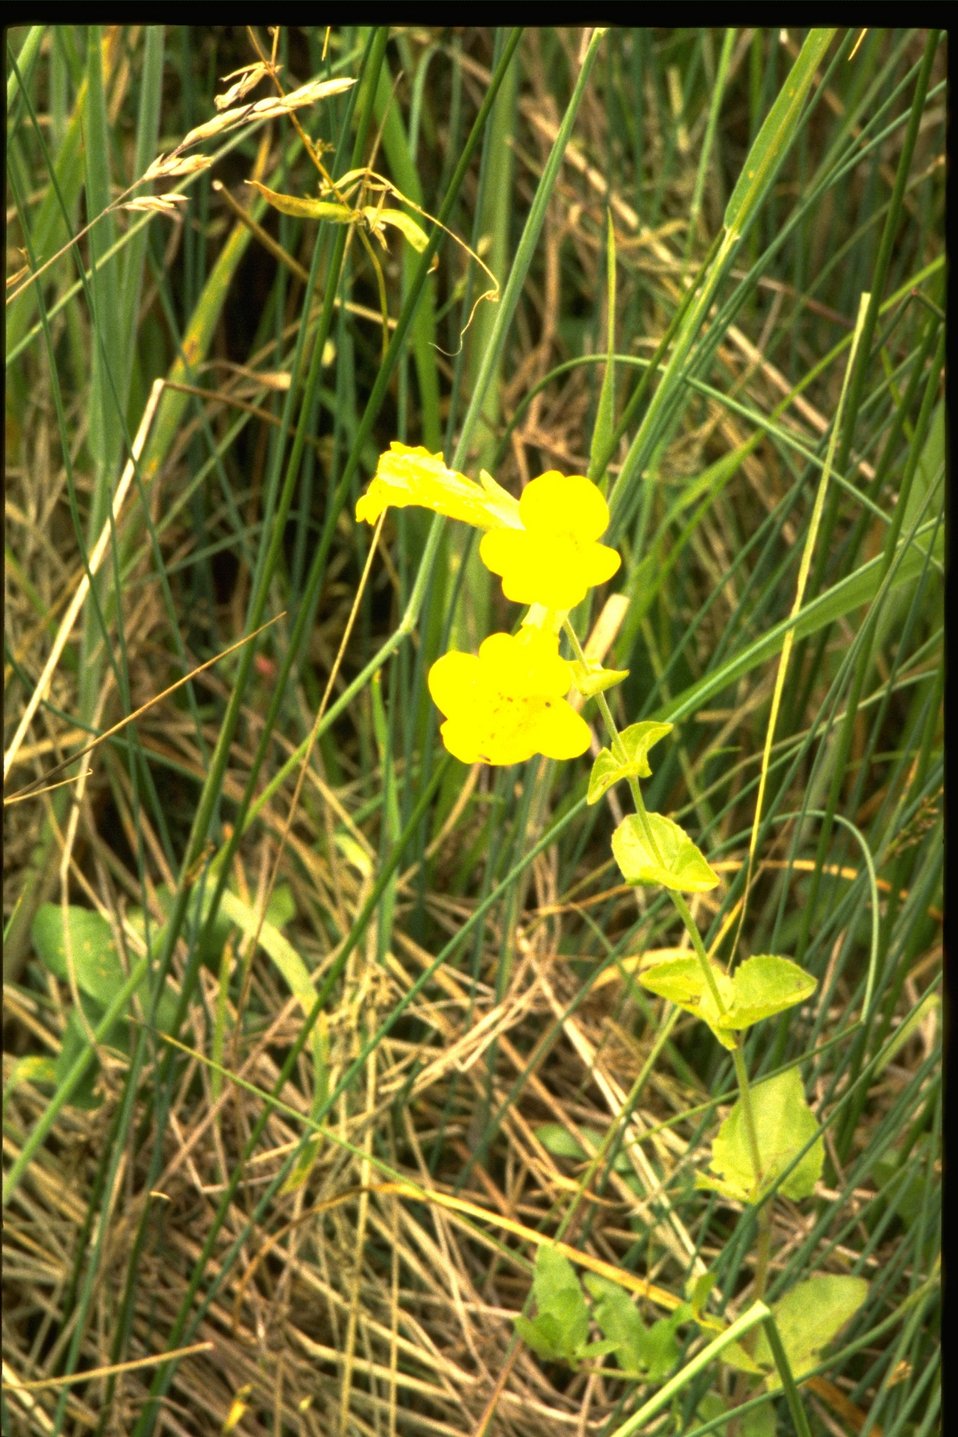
Medium shot of Mimulus guttatus.